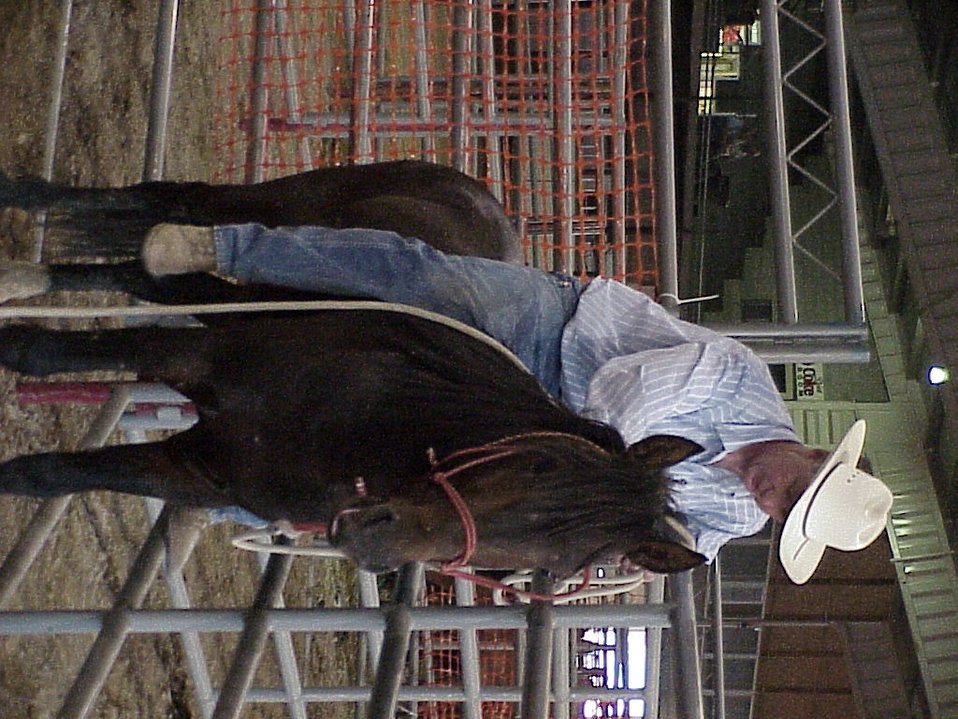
Horse Gentler Mario Johnson Lewiston Wild Horse and Burro Adoption Program Auction WHB indoor auction Cottonwood Field Office UCSC Upper Columbia Salmon Clearwater District